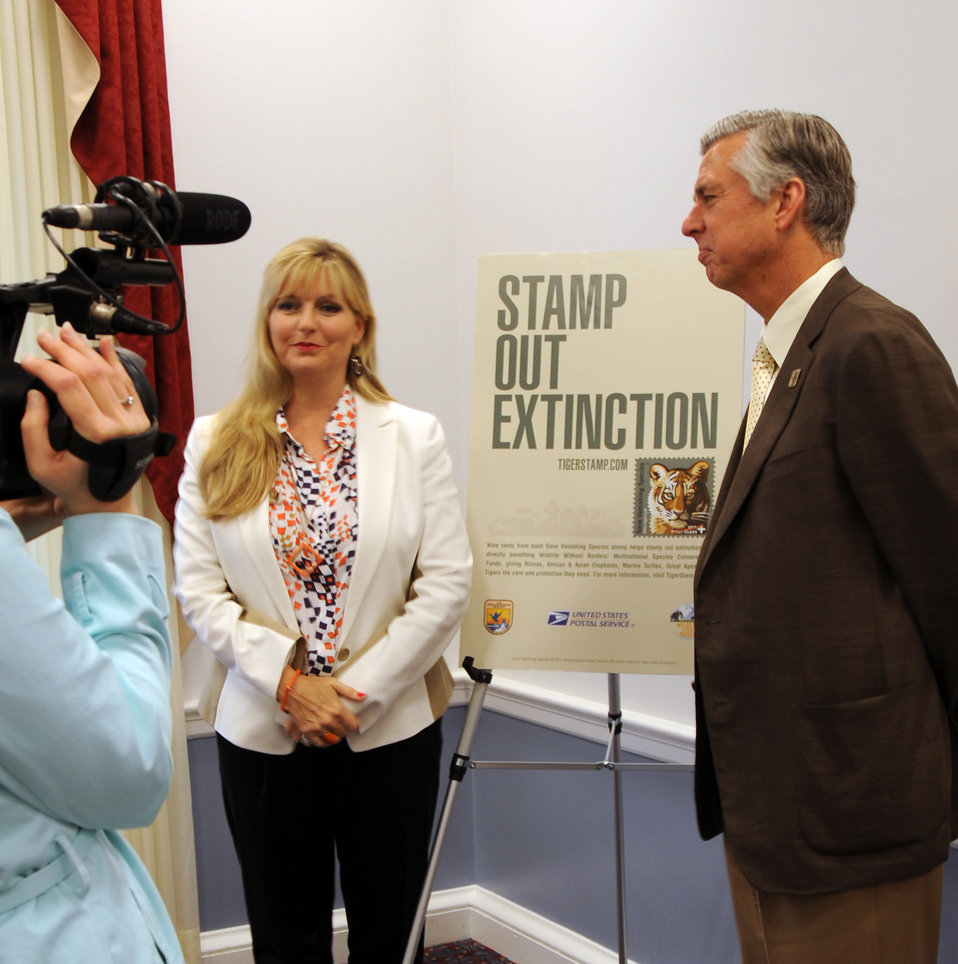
Save Vanishing Species on Capitol Hill

Karie Ross and Dave Dombrowski interviewed by U.S. Fish and Wildlife Service